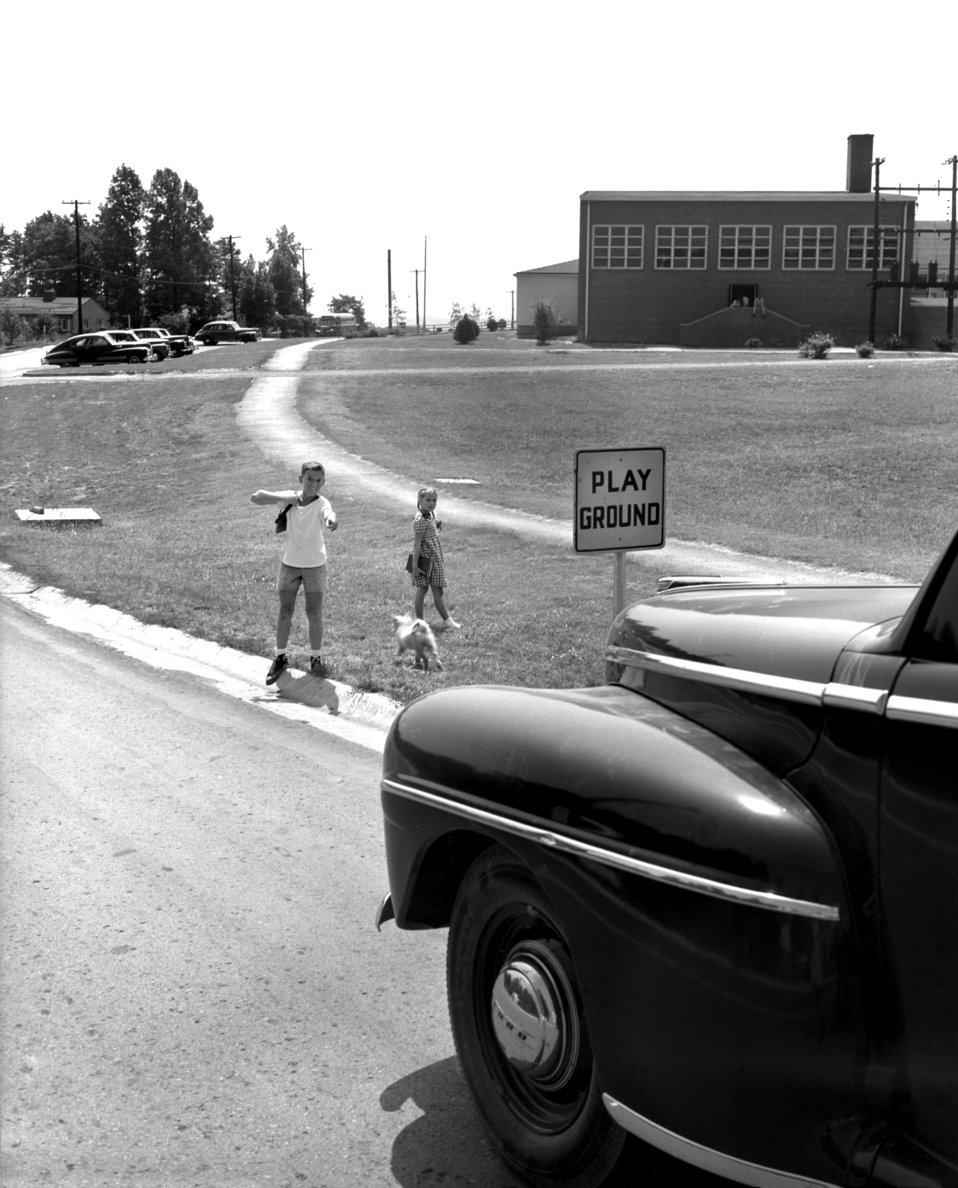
Children and Dog Oak Ridge

005219-4 DOE Photo by Lillian Stokes

Children and Dog for AEC Safety poster 8/26/1948